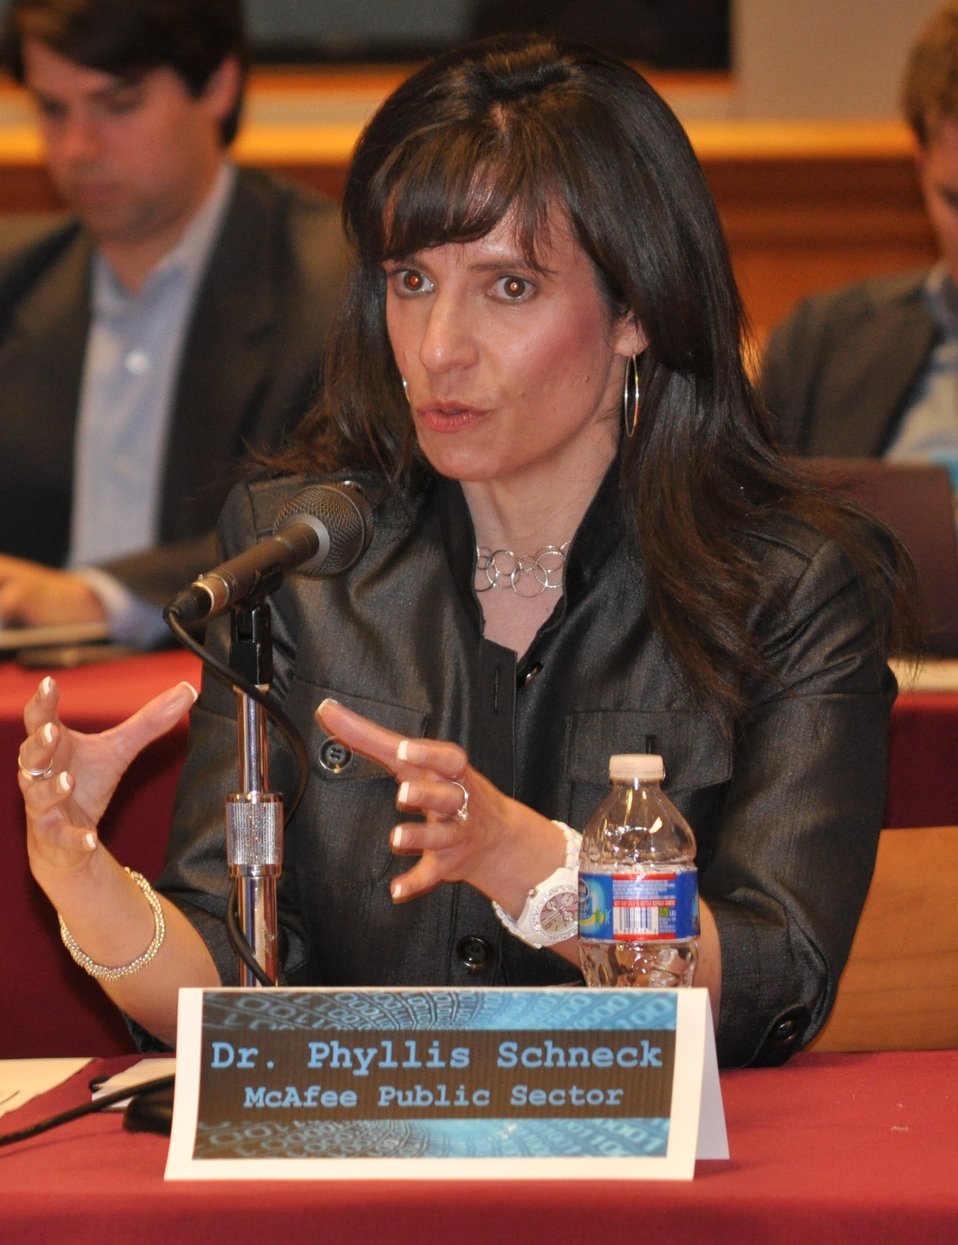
Cybersecurity 5-16

Cybersecurity for Small Business Roundtable; May 16, 2011